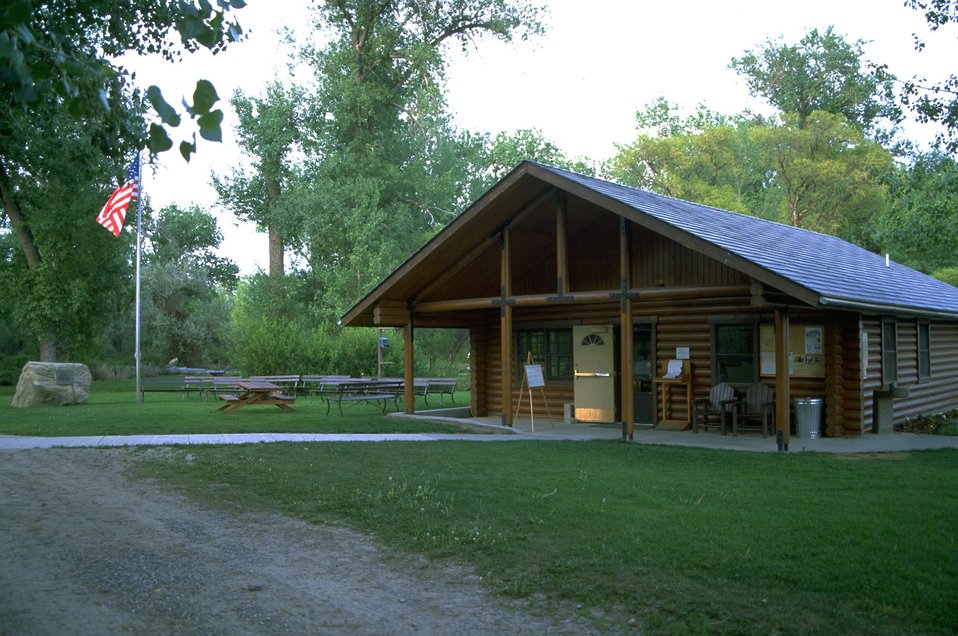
Pompeys Pillar Visitor Center - southwest side and back lawn area